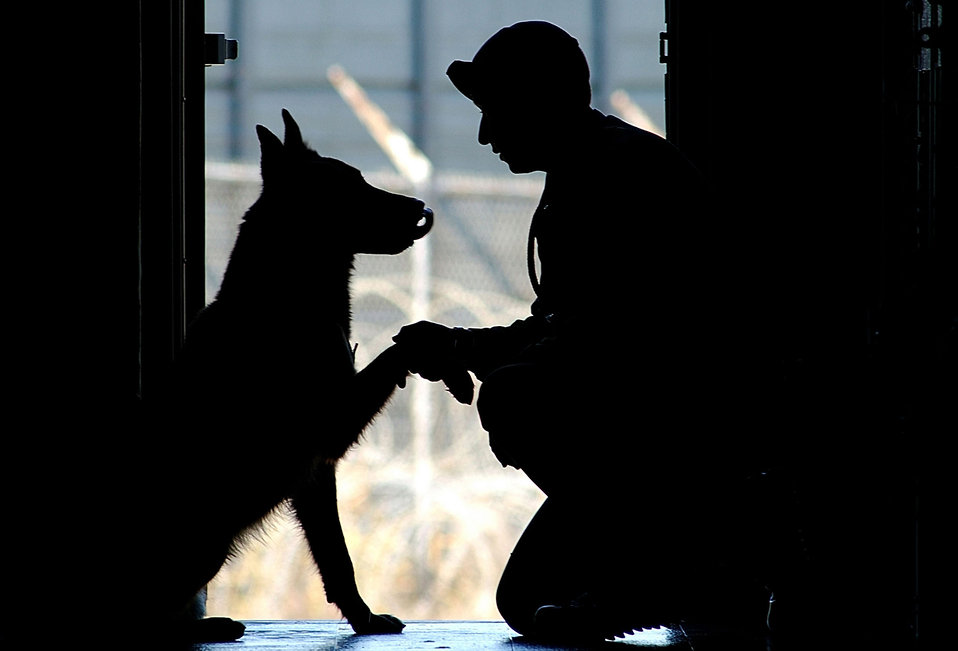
Friends

OPERATION ENDURING FREEDOM -- Senior Airman Gregory Darby, a military working dog handler from the 8th Security Forces Squadron at Kunsan Air Base, Republic of Korea, shares a quiet moment with his dog Mack, after completing the obstacle course at an Operation Enduring Freedom location.